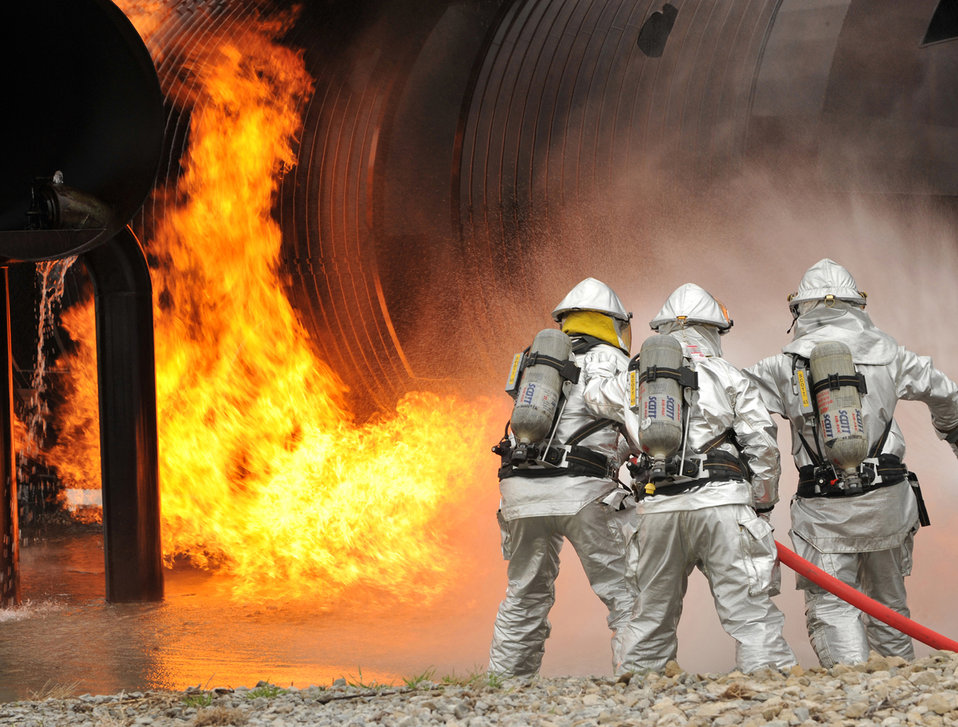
Taming the beast

Firefighters attack the flames of an